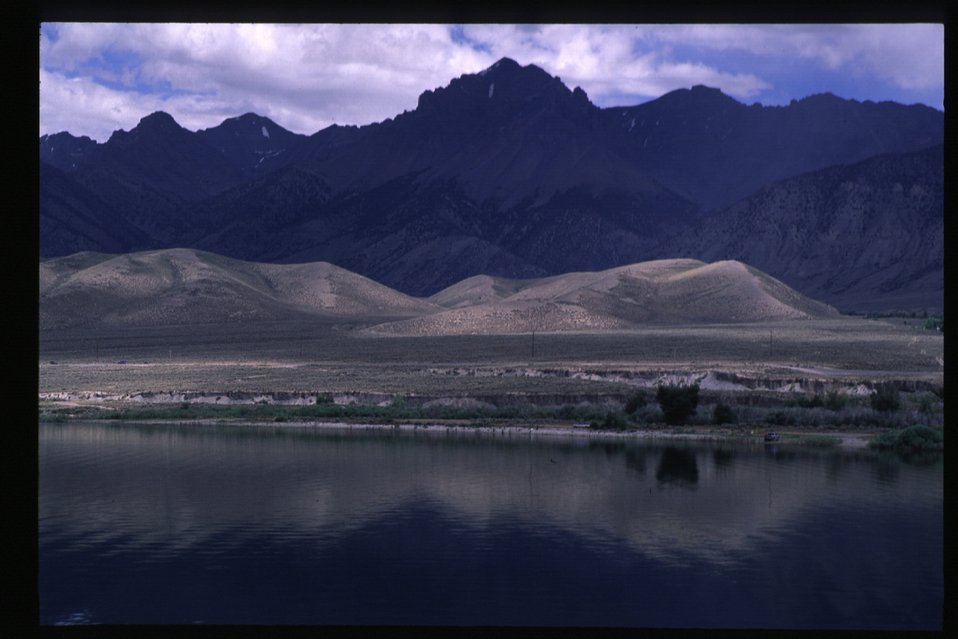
Scenic at Mackay Reservoir Challis Field Office UCSC Upper Columbia Salmon Clearwater District